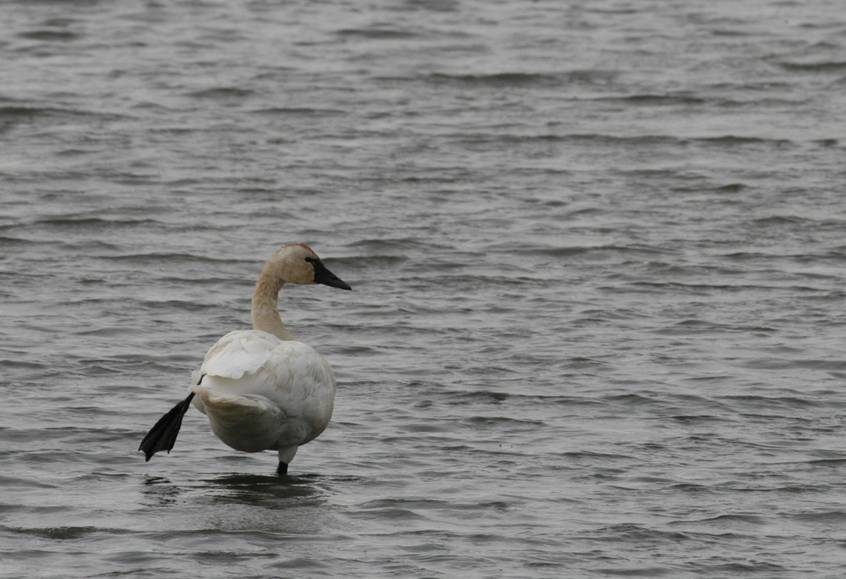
Tundra swan on Des Lacs Refuge

The Tundra (Whistling) Swan is the most common swan species of North America. Its numbers seem to be slowly declining in the west of its range since the late 19th century, coinciding with the expansion of human settlement and habitat conversion in the birds' wintering areas